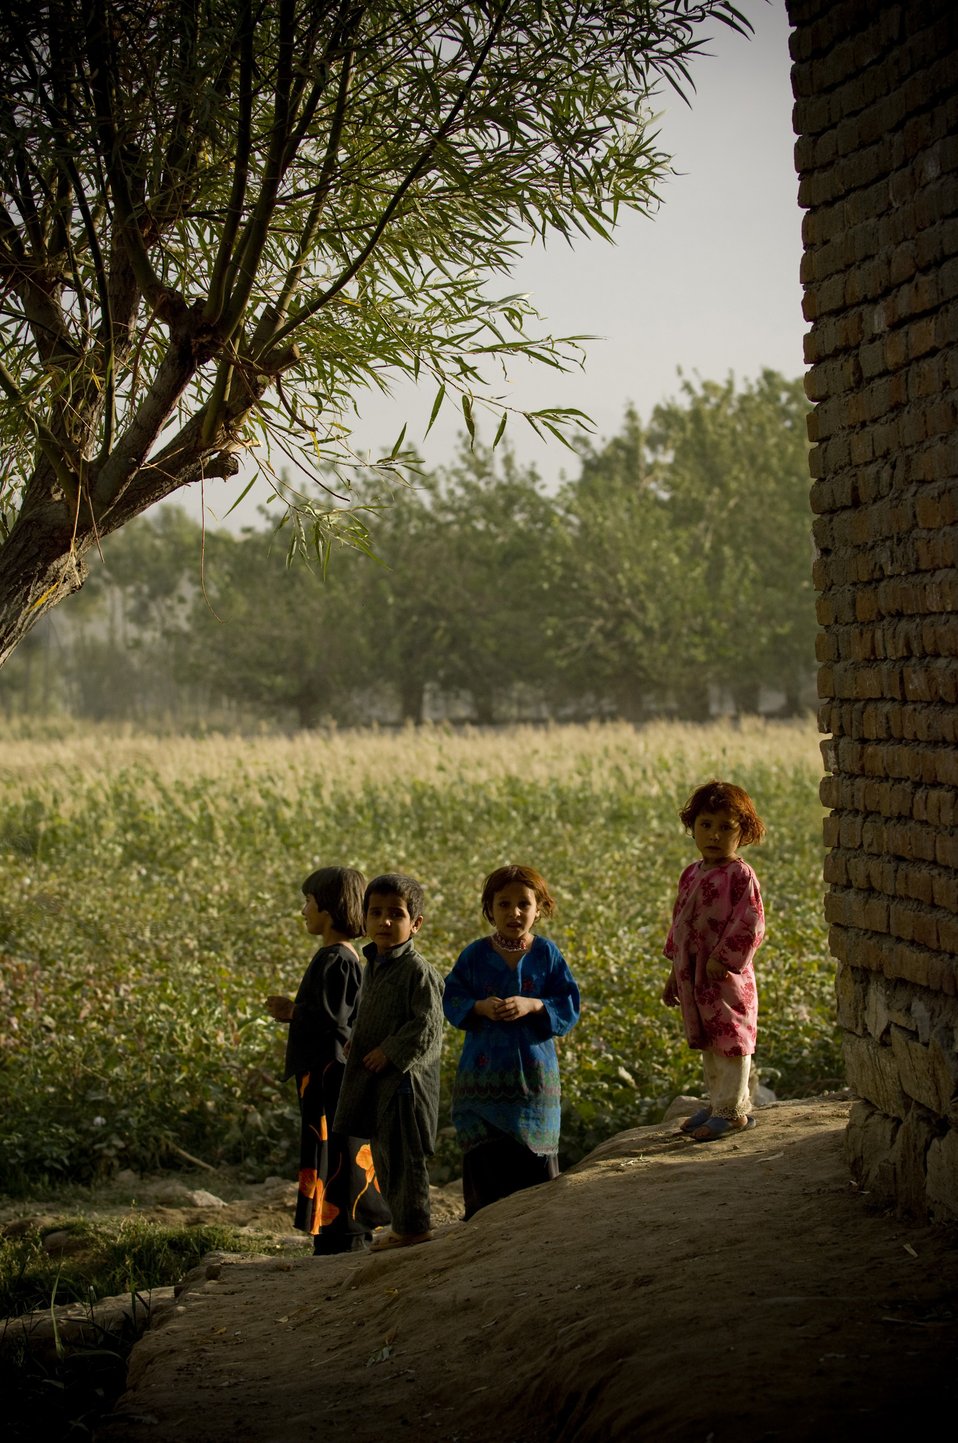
Village visit

Small children stop to look at the commotion recently in an Afghan village. The presence of coalition forces drew most of the village out of their homes for curiosity's sake.